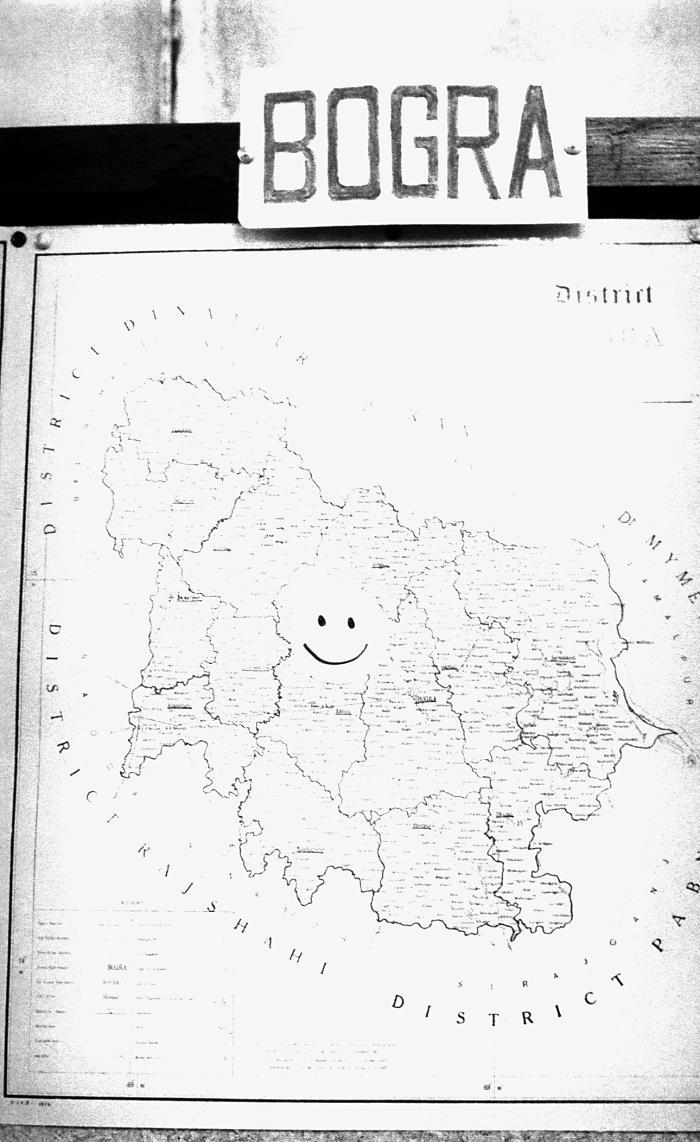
This photograph, captured in 1975, depicted a map of the Bangladesh district of Bogra after it had been deemed free of smallpox. The Russian press was intrigued by the 'smiley face' emblem, which inspired the Soviets to adhere them to the front of each smallpox-free map.